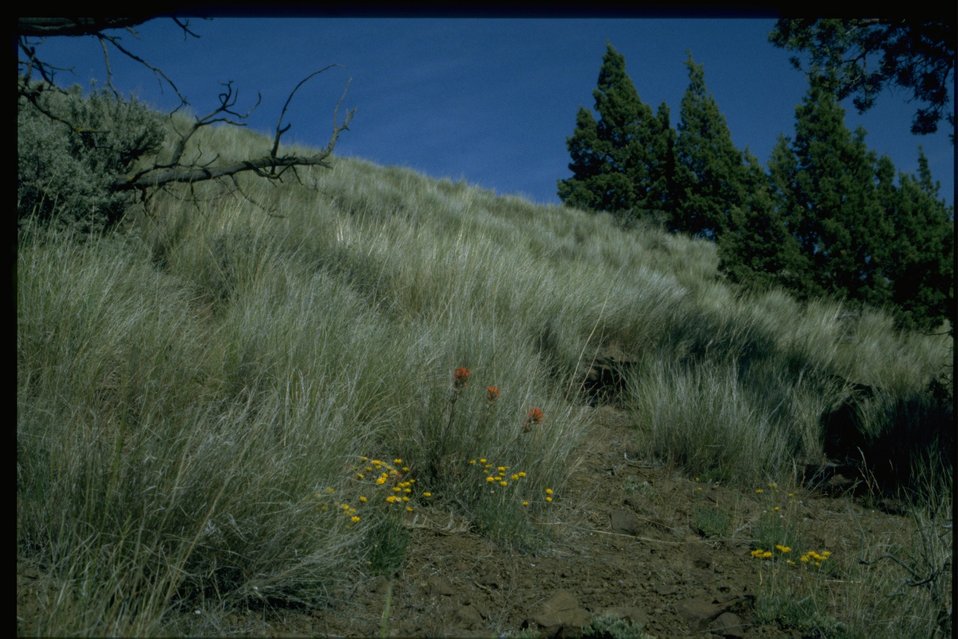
Lush, native Bluebunch wheatgrass (Pseudoroegneria spicata ssp. spicata).